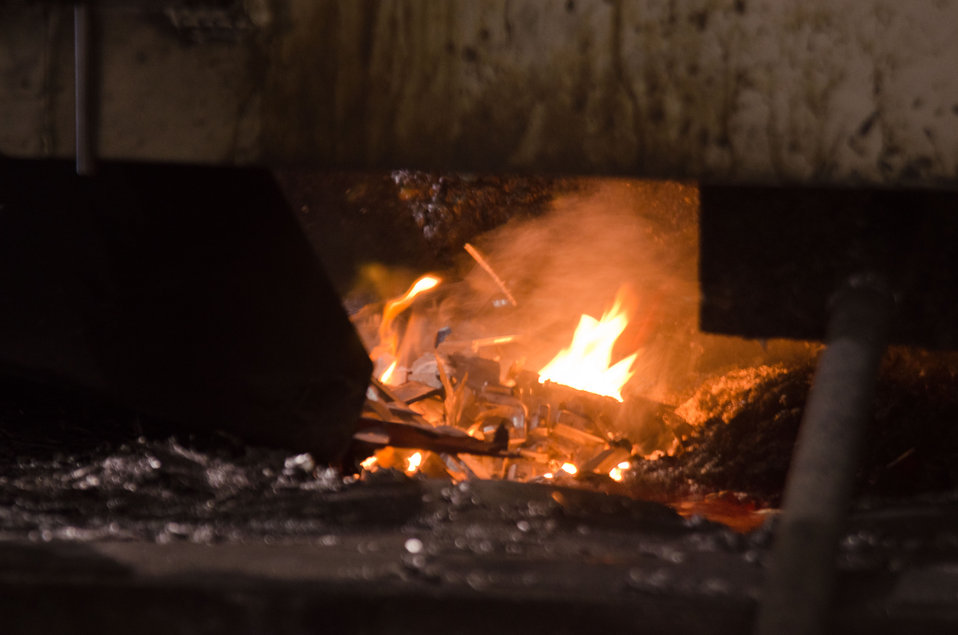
Recycled aluminum melts in the furnace crucible at Port City Group’s Port City Castings Corporation, a manufacturer of high-pressure aluminum die-castings, mostly for the automotive industry, in Muskegon, MI, facility on Wednesday July 20, 2011. Port City Group boosted its employment by 12 percent over last year thanks to two Rural Business Guaranteed Loans totaling $9.6 million. In its 80,000 sq. ft. facility, machines that range from 800 – 1,600 tons, and cast A380 aluminum alloy products from melted ingots of aluminum, into automotive components of U.S.A. made vehicles. The process features a variety of robotic presses; computer controlled machining; quality control facility; and complete measurement and testing laboratory. In 2009 banks were backing out of loans for PCG equipment purchase agreements. The U.S. Department of Agriculture (USDA) loan guarantee helped make the loan possible with its guarantee. PCG obtained the needed robotic and other equipment. This resulted in a stable workforce that has since grown. When asked about their USDA experience, Port City Group Sales Manager Laura LaGuire said, “It was great! They were very helpful. Everything that came up was handled smoothly, the money came in place when it was needed, and it was a very smooth transition.”